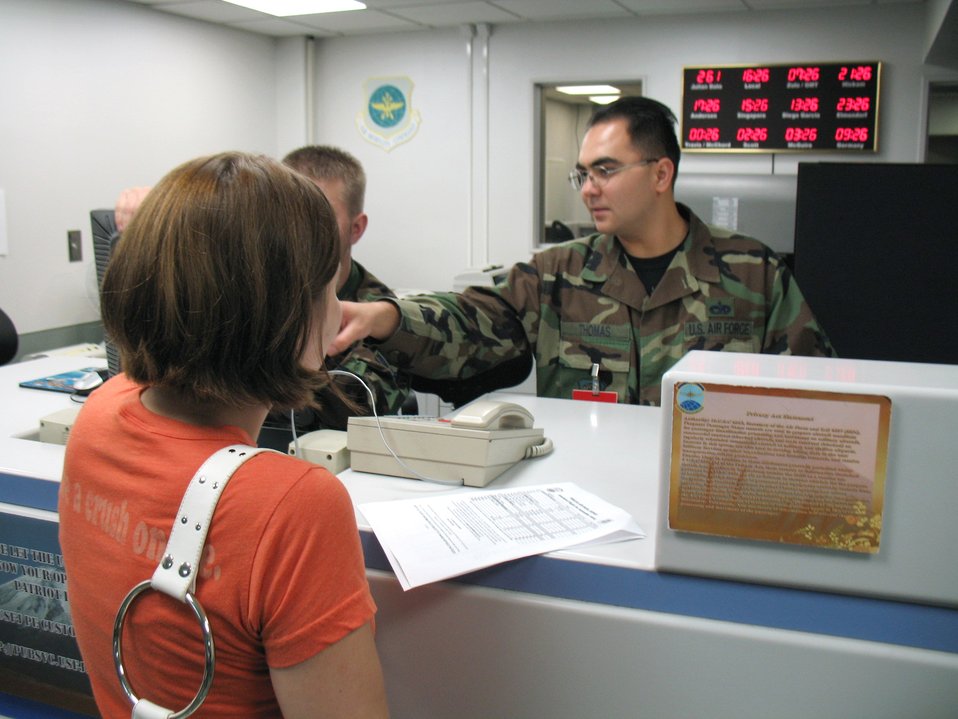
Air Force birthday

Staff Sgt. Robert Thomas assists passengers at the Yokota Air Base, Japan, passenger terminal Sept. 18. A native of Bremerton, Wash, Sergeant Thomas is a passenger service specialist assigned to the 730th Air Mobility Squadron.